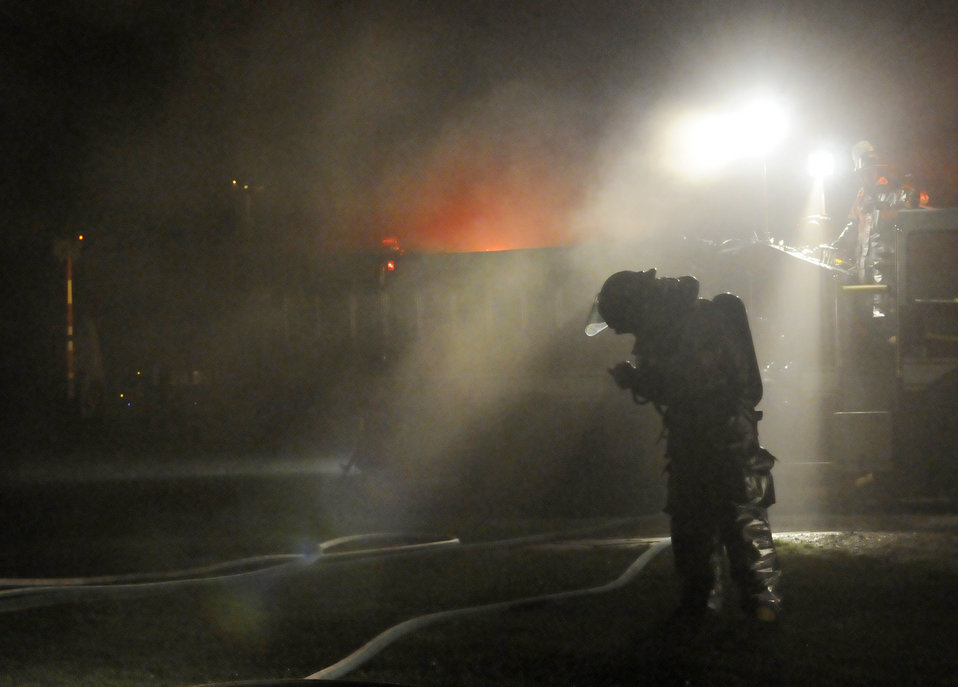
Working the night shift

A firefighter checks his equipment in a haze of smoke from a simulated building fire during an operational readiness exercise July 23 at Royal Air Force Mildenhall, England. The exercise is designed to prepare Airmen to do their jobs in a deployed environment and in a worst-case scenario. The firefighter is assigned to the 100th Civil Engineer Squadron.